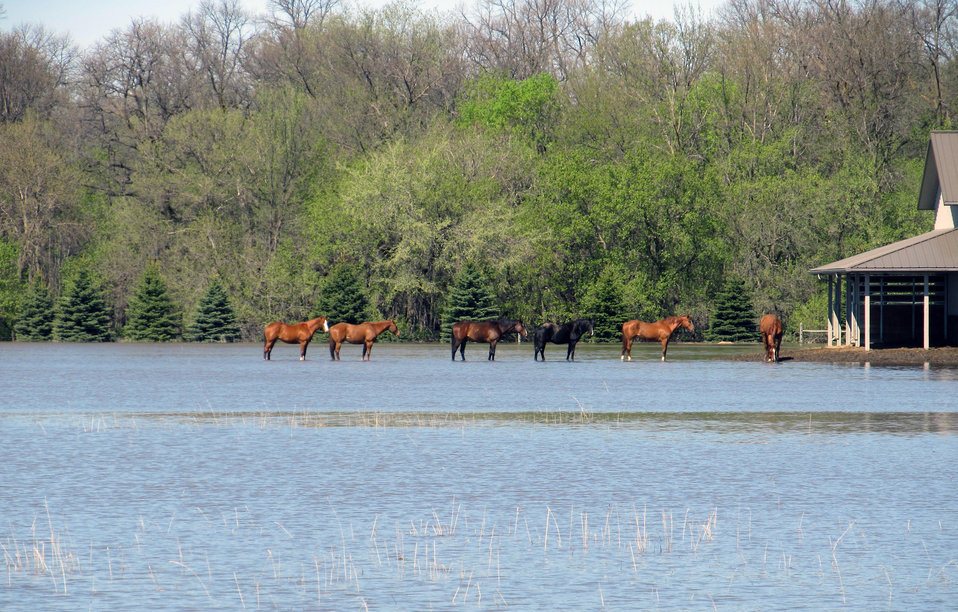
Flooding and water damage in the Park and Tongue River Watersheds located in Cavalier, Pembina and Cavalaier Counties in North Dakota on Thursday, May 23, 2013.